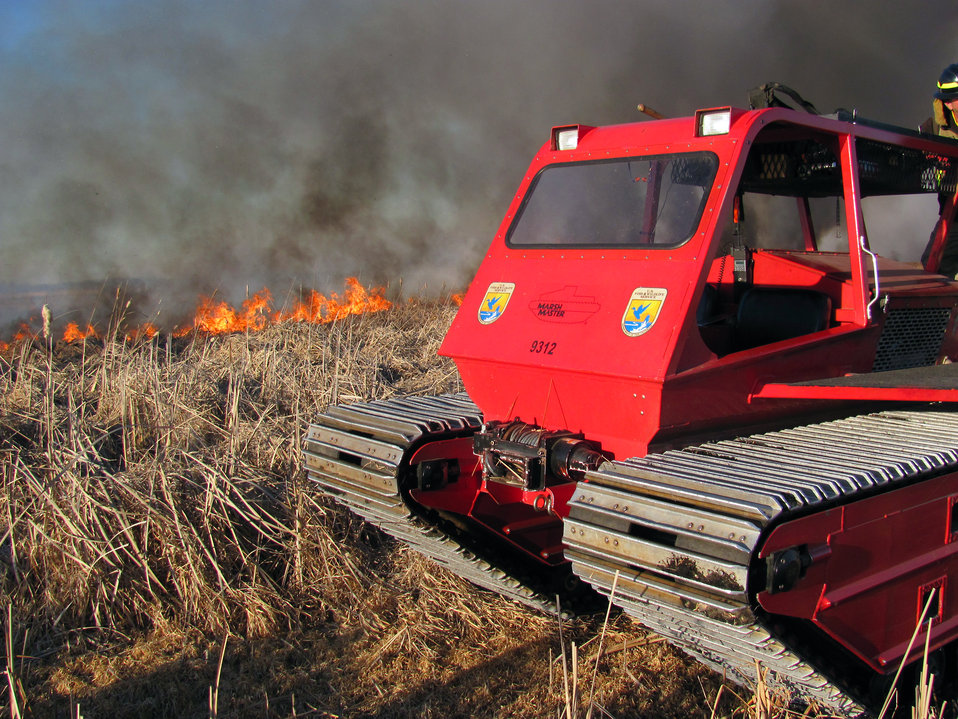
Torches and Marshmasters used in burn.

Mike Madel of Horicon NWR gets torches set up to start the burn. Torches have wicks on the ends, so when a torch is tipped, the escaping fuel ignites. The equipment is a Marshmaster, used to negotiate difficult terrain.